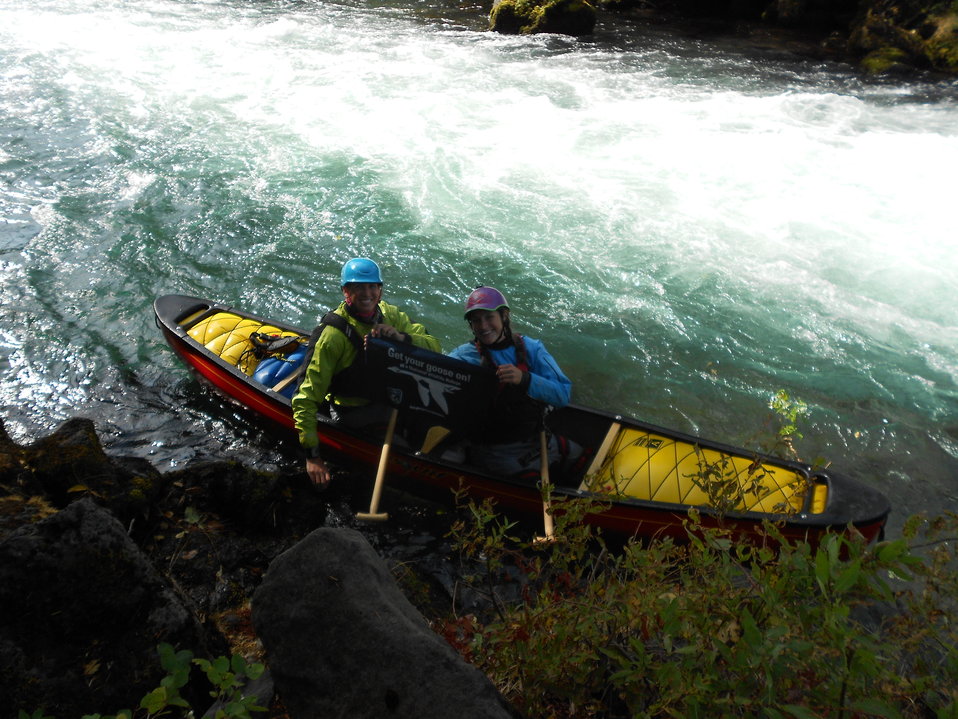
Get Your Goose On! White Water Rapid Style

Kayakers along the Little White Salmon River needed that Goose towel to dry off after a trip down the river (that is not navigable with the removal of the Condit Dam).